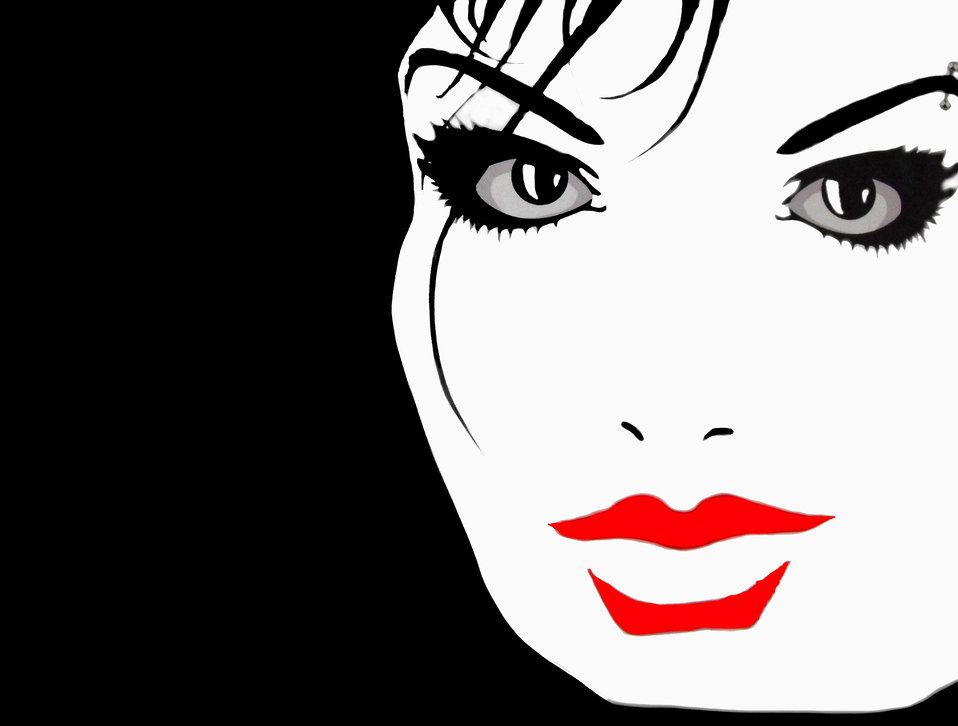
Girl face painted white with photoshop.